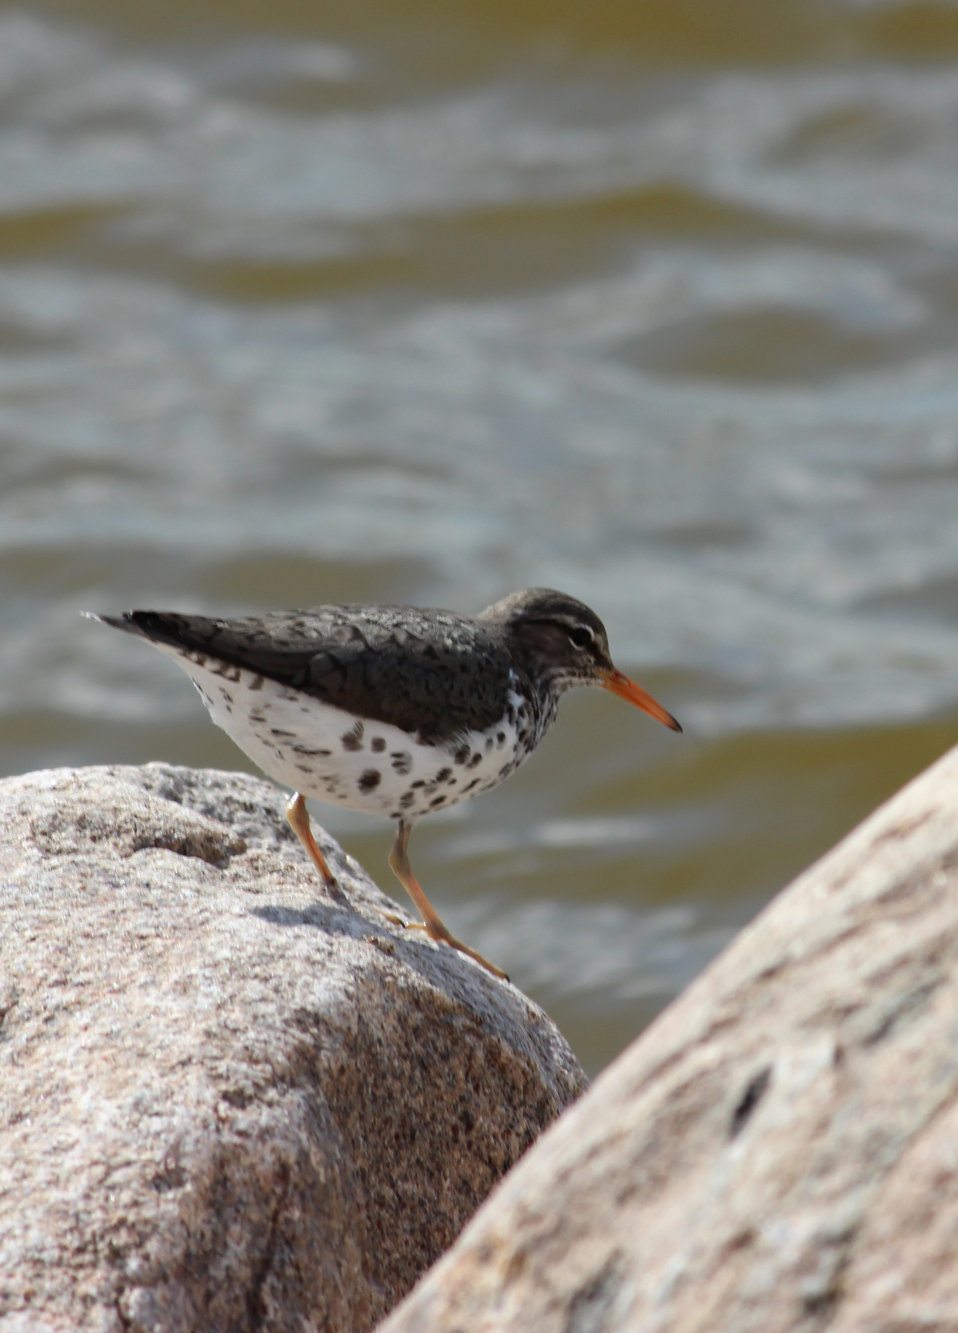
Spotted Sandpiper

This widely-distributed shorebird is fairly easy to identify during the summer when its breast is dotted with bold spots. However, in the winter, the breast pales out to solid white. Spotted sandpipers also display role reversal with the female defending the territory and the male doing most of the work to raise the young. Photo taken at Schneider Waterfowl Production Area, Dickey County, North Dakota.